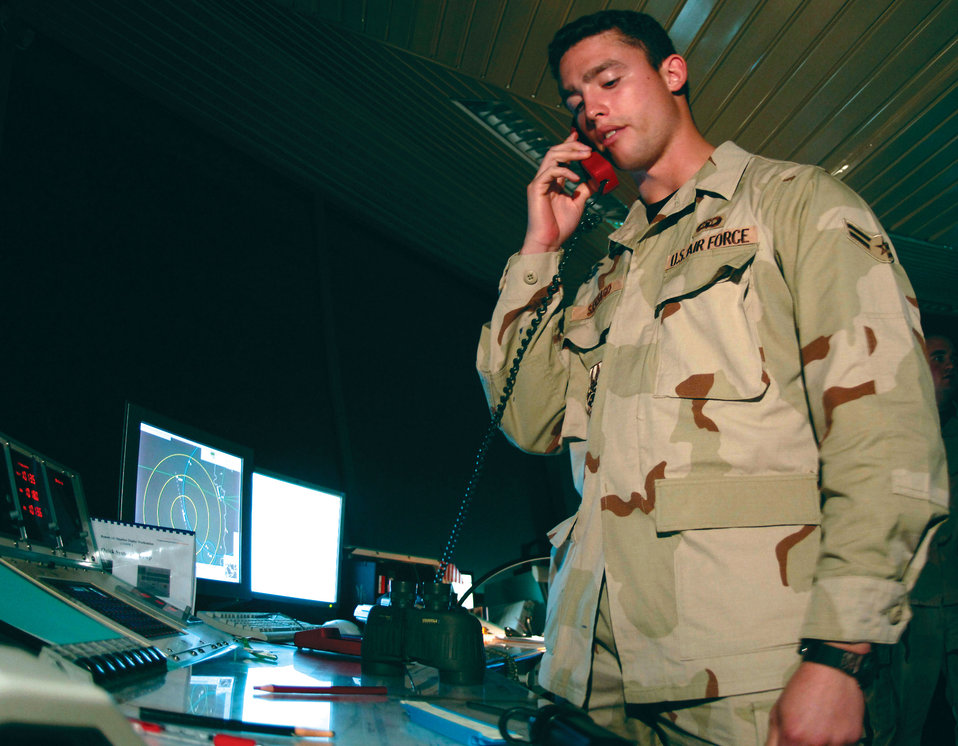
379th fights GWOT 24/7

Airman 1st Class Carlos Santiago works in the air traffic control tower clearing aircraft for takeoffs and landings while coordinating flight plans with airfield management to ensure safe and efficient use of runway and air space. He is an air traffic control specialist assigned to the 379th Expeditionary Operation Support Squadron.